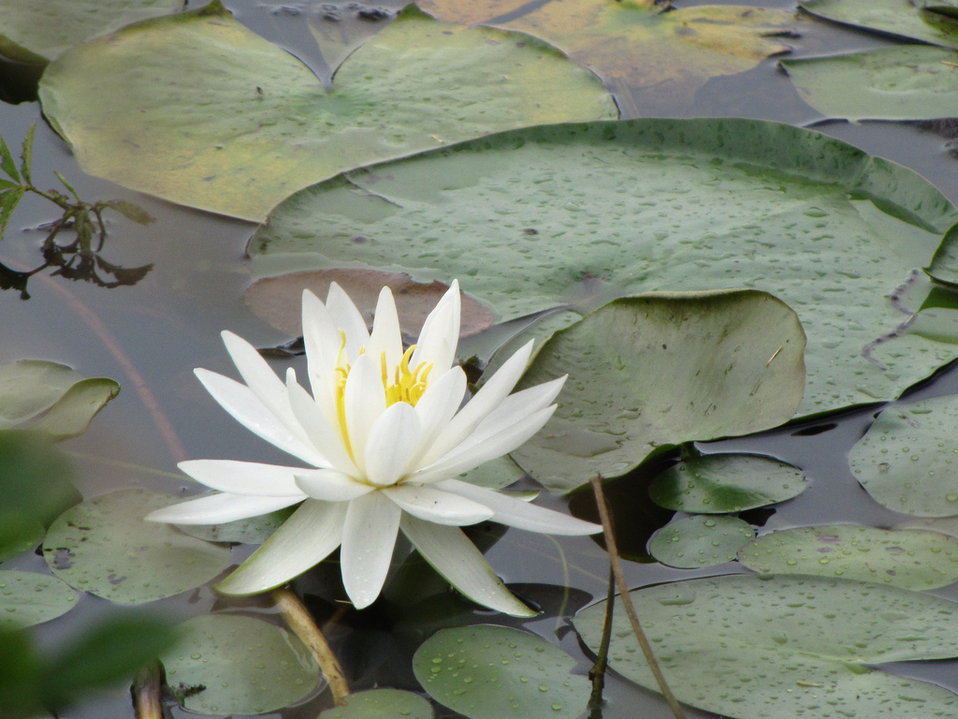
fragrant water lily

Seney National Wildlife Refuge